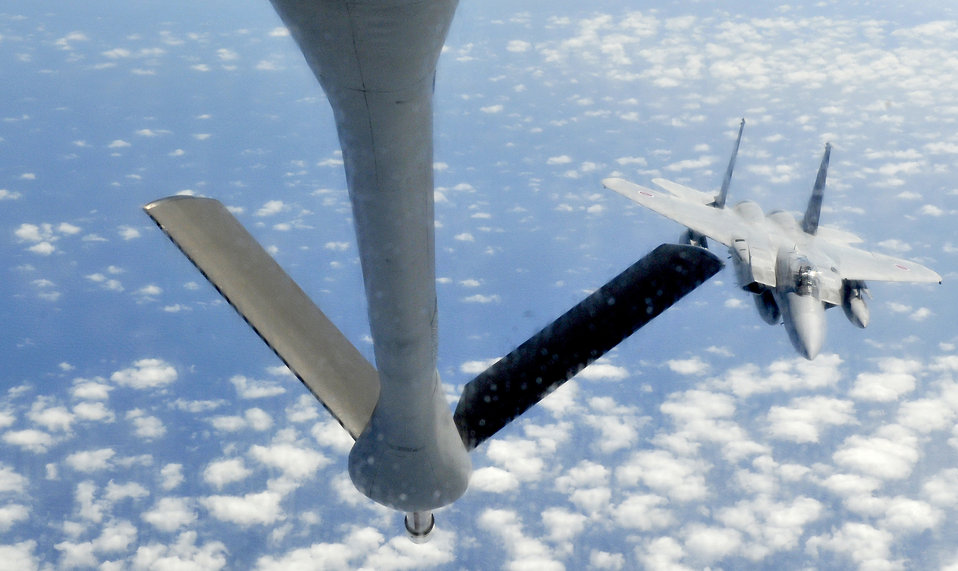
Airmen prepare JASDF pilots

A Japan Air Self Defense Force F-15 Eagle refuels from a 909th Air Refueling Squadron KC-135 Stratotanker during bilateral air refueling training May 17, 2010, at Kadena Air Base, Japan.